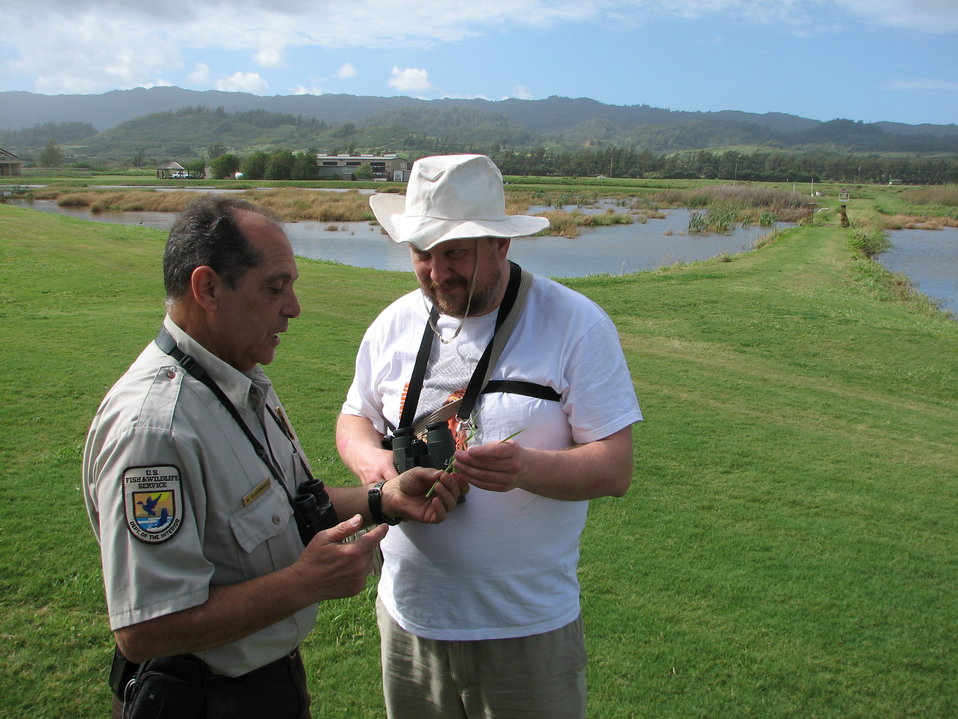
Mike Silbernagle and Evgeniy Syroechkovskiy at James Campbell NWR

Scientific exchange at James Campbell National Wildlife Refuge.